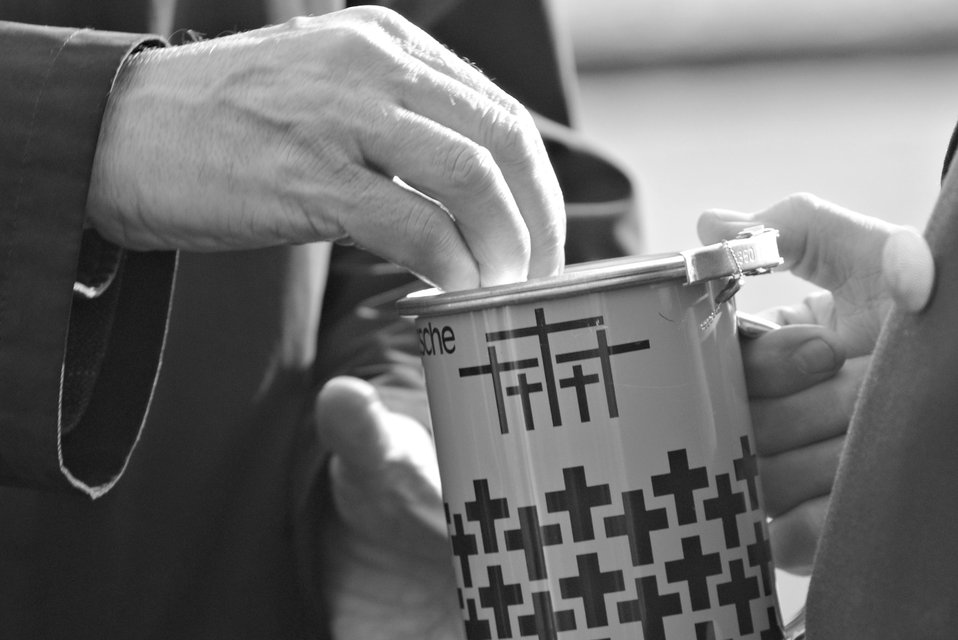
National Day of Mourning

A visitor gives a donation before entering a ceremony for Volkstrauertag, or the German National Day of Mourning ceremony Nov. 11, 2010, at Bitburg, Germany. German and American servicemembers as well as firefighters, police and government officials from the local area participated in the ceremony to remember victims of war and tyranny.